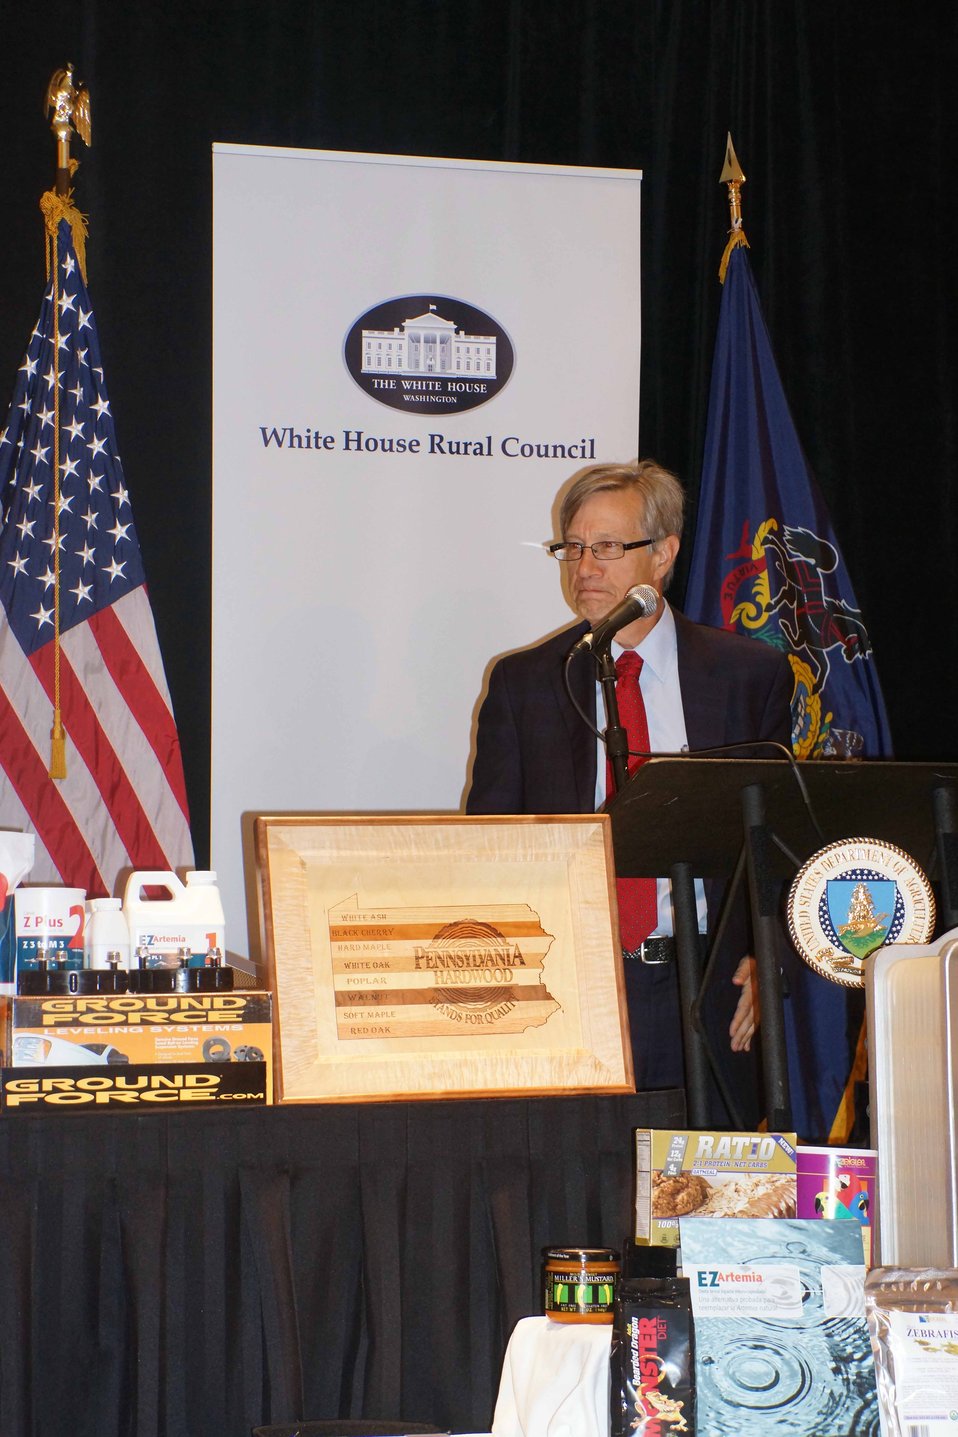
Appalachian Regional Commission Federal Co-chair Earl Gohl addresses the crowd, noting that Appalachia is poised to be the next great export area in America at the “Made in Rural America Regional Forum” in Canonsburg, PA on Jun. 4, 2014. USDA photo Dawn Bonsell.